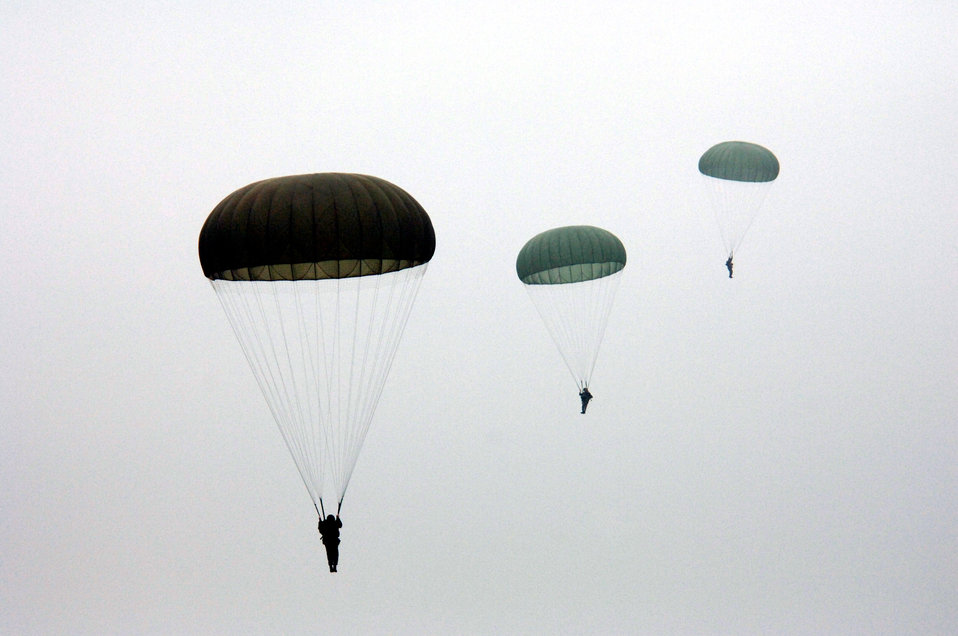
Multinational training

Paratroopers from the United States, Belgium, France, Germany, Italy and the Netherlands land near Alzey, Germany, on Thursday, April 27, 2006. Three days of jumps were scheduled using air transports from the 37th Airlift Squadron at Ramstein Air Base, Germany.